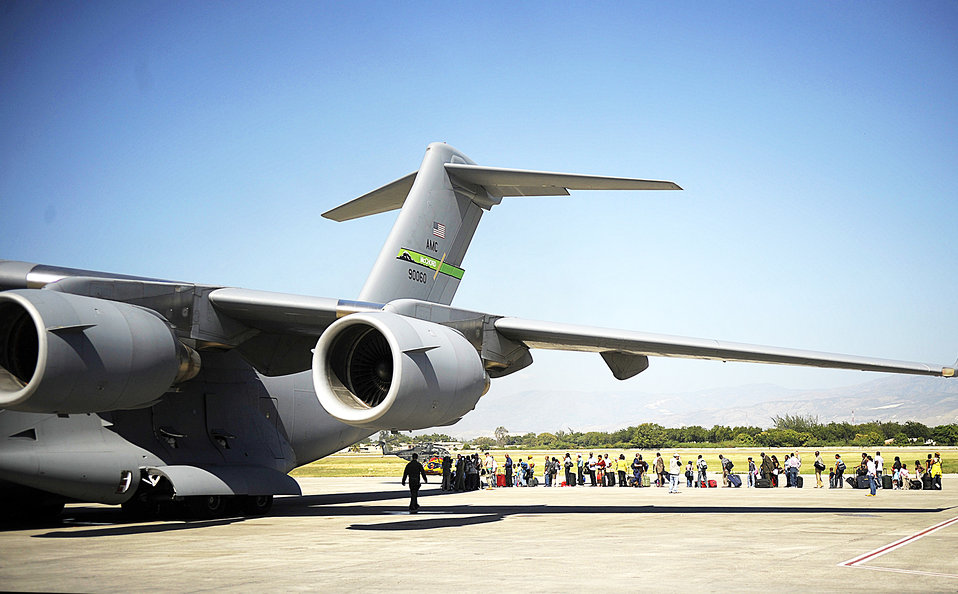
Relief efforts in Haiti

Lining up to board a C-17 Globemaster III, U.S. citizens living in Haiti evacuate from Toussaint L'Ouverture International Airport, in Port-au-Prince, Haiti, Jan. 18, 2010.